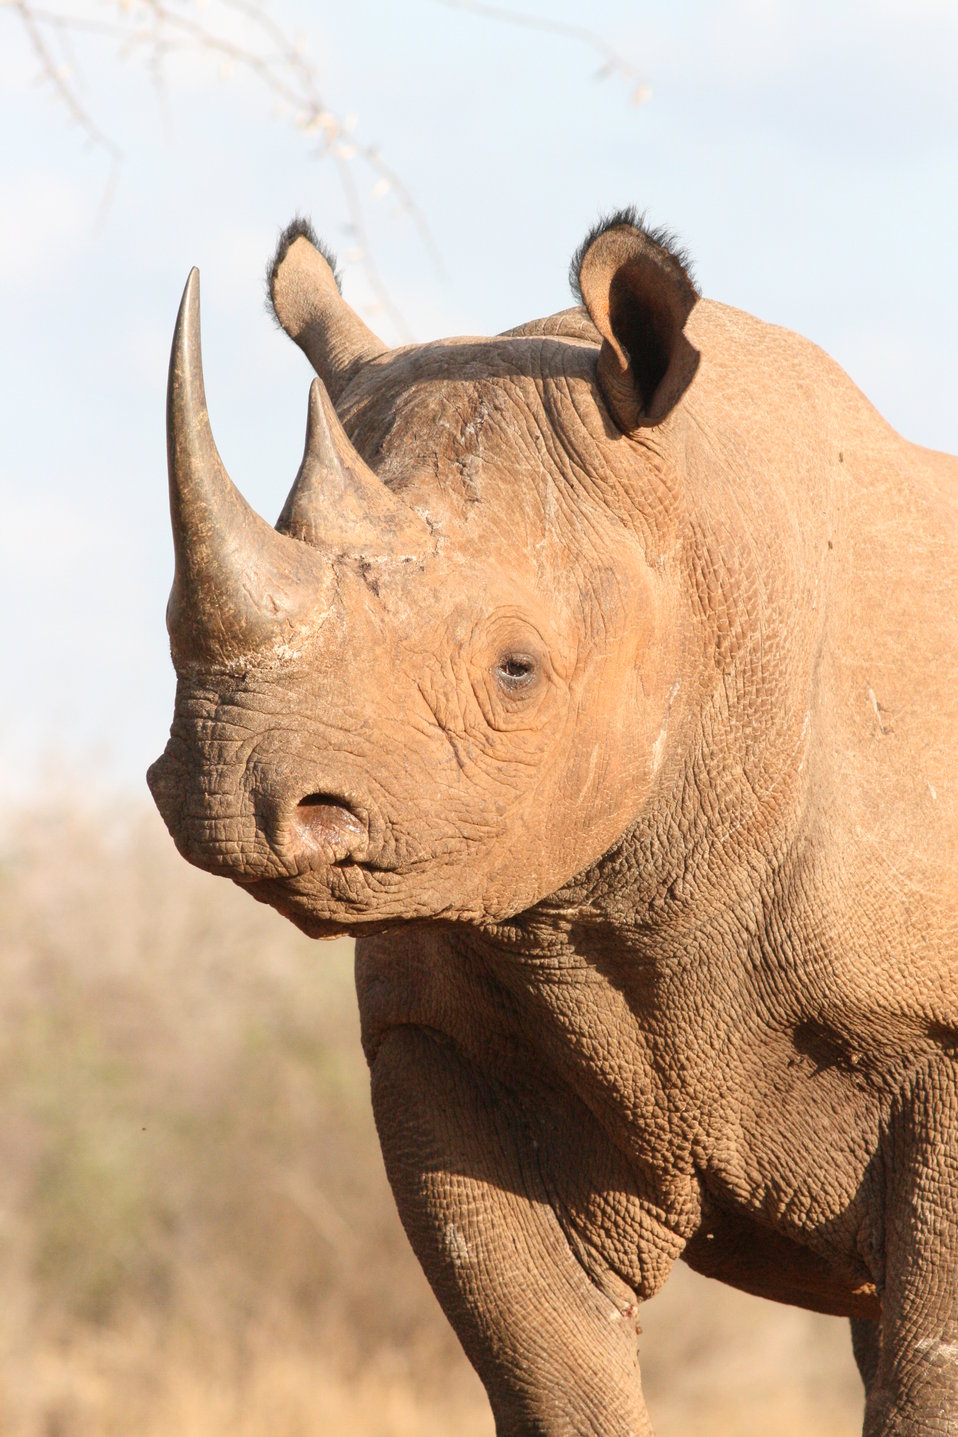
Black rhino

Mkomazi National Park, Tanzania